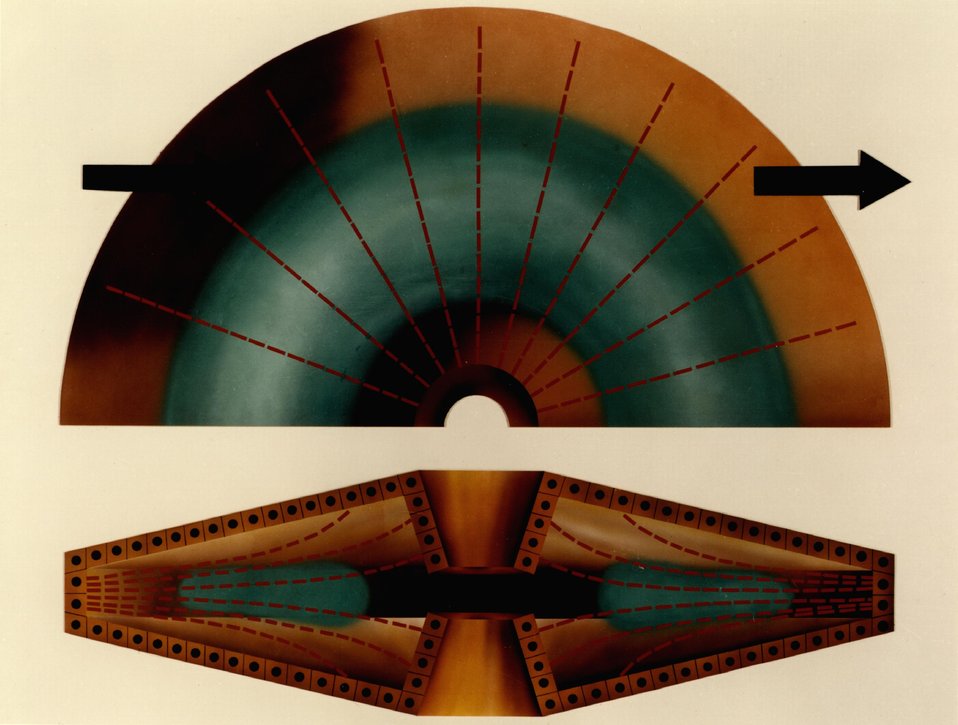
Scale Model of the Mirror Disc Machine.